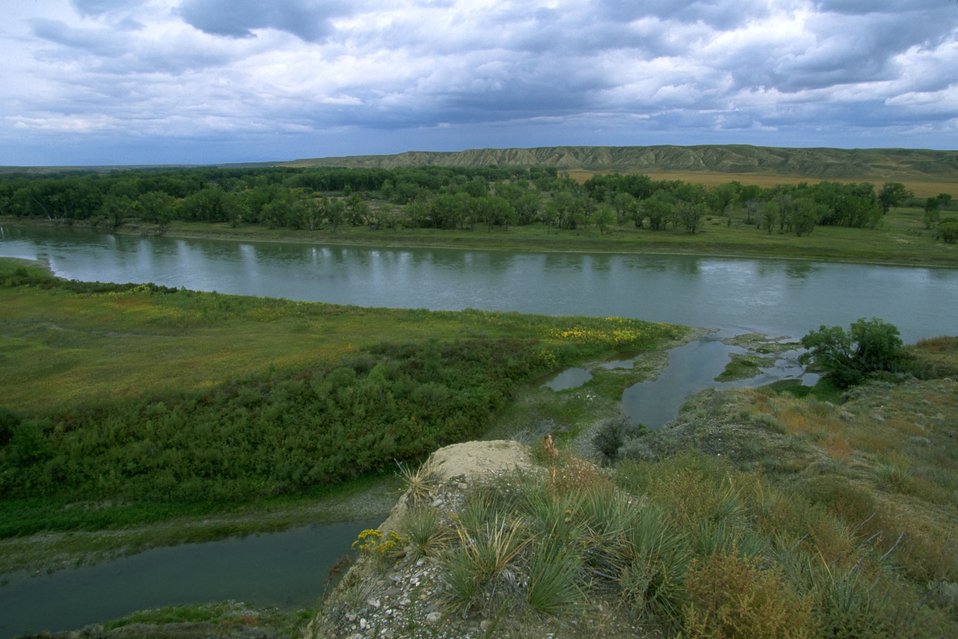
Decision Point, the confluence of the Missouri and Marias Rivers